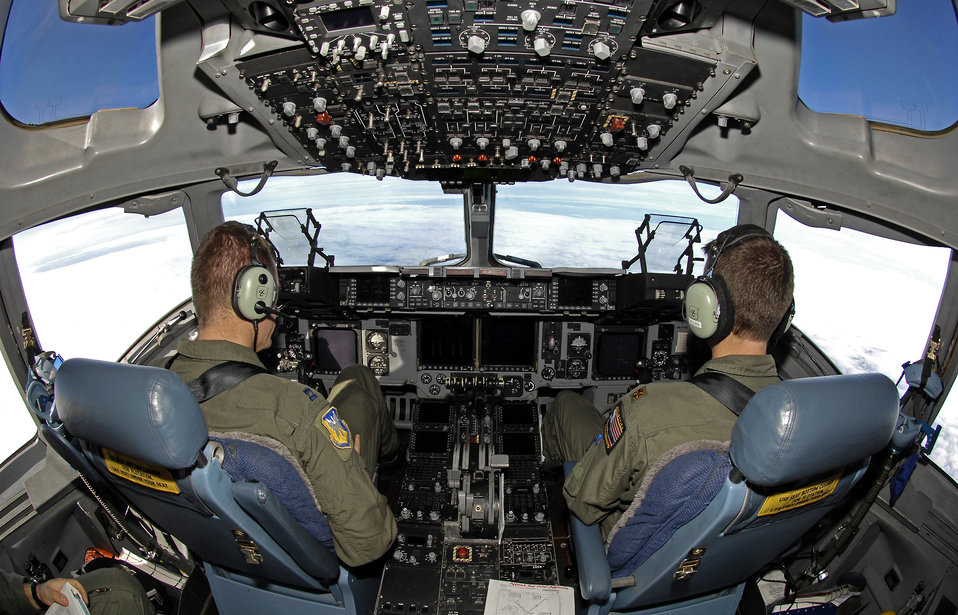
Team conducts emergency medical movement in Antarctica

Capt. Philip Poeppelman and Maj. Jason Allen look out over the ice Sept. 10 as they deliver supplies and equipment to McMurdo Station, Antarctica. On the return flight the crew evacuated a person assigned to the National Science Foundation in need of a cardiovascular evaluation to Christchurch, New Zealand. The medical movement was conducted by the Joint Task Force Support Forces Antarctica. Captain Poeppelman is an active-duty evaluator pilot with the 8th Airlift Squadron, and Major Allen is a Reserve evaluator pilot with the 97th Airlift Squadron, both at McChord Air Force Base, Wash.